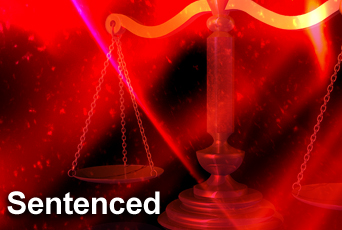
Air Force captain sentenced to 50 years

Capt. Devery L. Taylor of the 96th Medical Group at Eglin Air Force Base, Fla., was sentenced after being found guilty Feb. 28 on four counts of forcible sodomy, two counts of attempted sodomy, two counts of kidnapping and one count of unlawful entry.